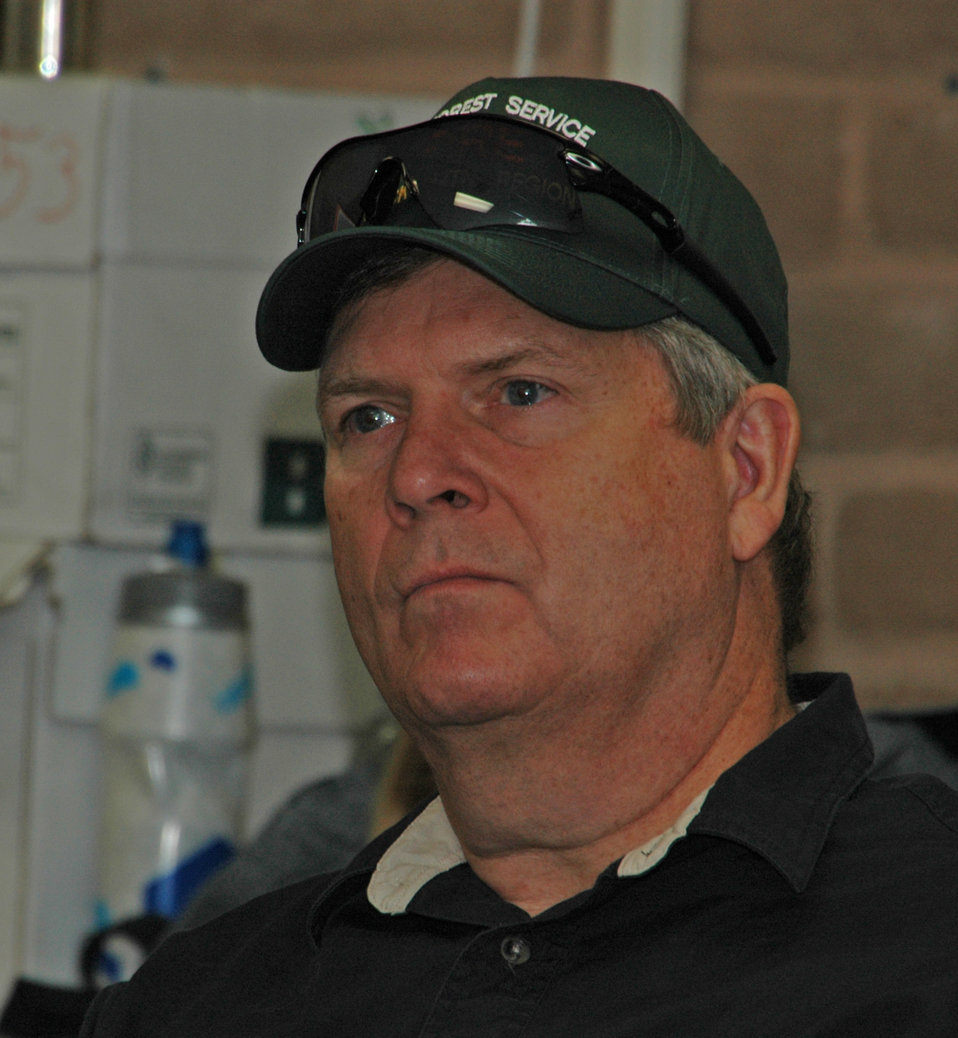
Agriculture Secretary Tom Vilsack listens to a briefing during his visit to the Waldo Canyon Fire near Colorado Springs, CO on Tuesday, July 3, 2012.